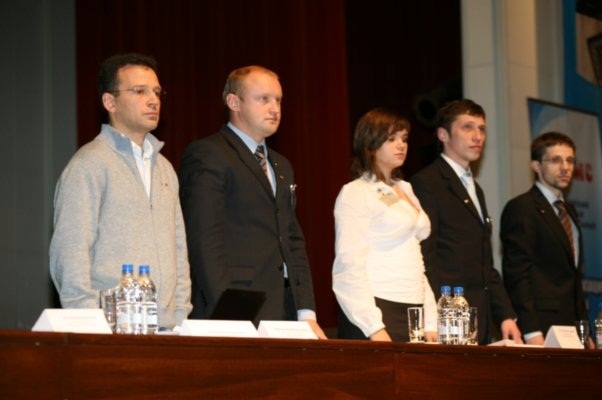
1 Congress Project personnel for the country's modernization, youth movement NASHI. The Members Of The Bureau: Mr. Vasily Yakemenko, Mr. Sergey Belokonev, Ms. Elena Verejnikova Русский: Члены президиума на 1 съезде,проекта КМС - Кадры для молернизации страны, движения НАШИ. С лево на право: Василий Якеменко, Сергей Белоконев, Первый зам. руководителя проекта КМС Елена Вережникова